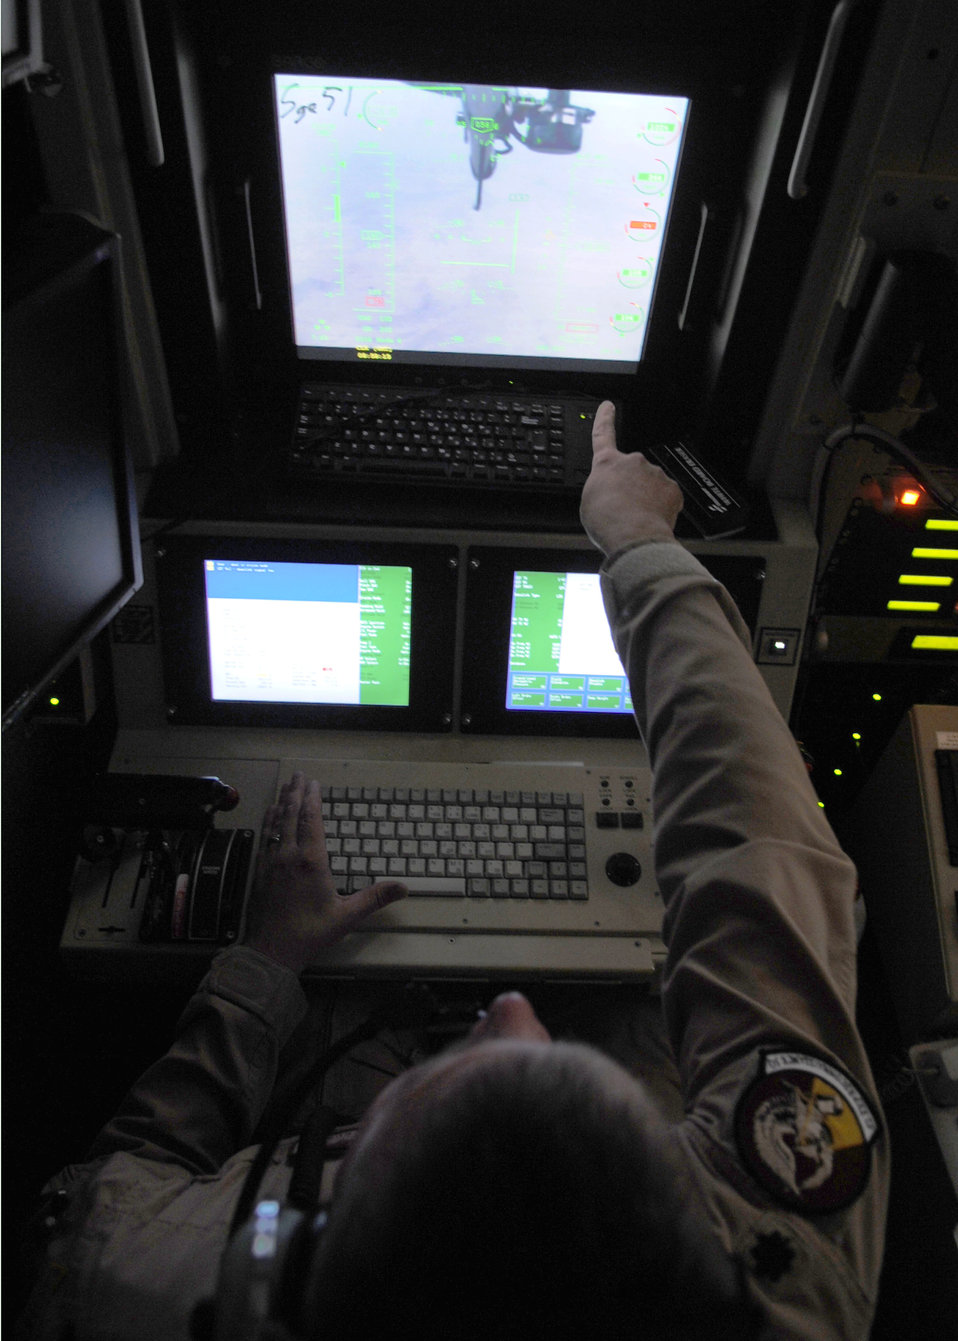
Airmen reach 250K flying hours with remotely piloted aircraft

Lt. Col. James Curry remotely pilots the MQ-9 Reaper June 8, 2010, at Kandahar Airfield, Afghanistan. The remotely piloted aircraft are launched, recovered and landed by members of the 62nd Expeditionary Reconnaissance Squadron. Colonel Curry is the 62nd ERS commander.